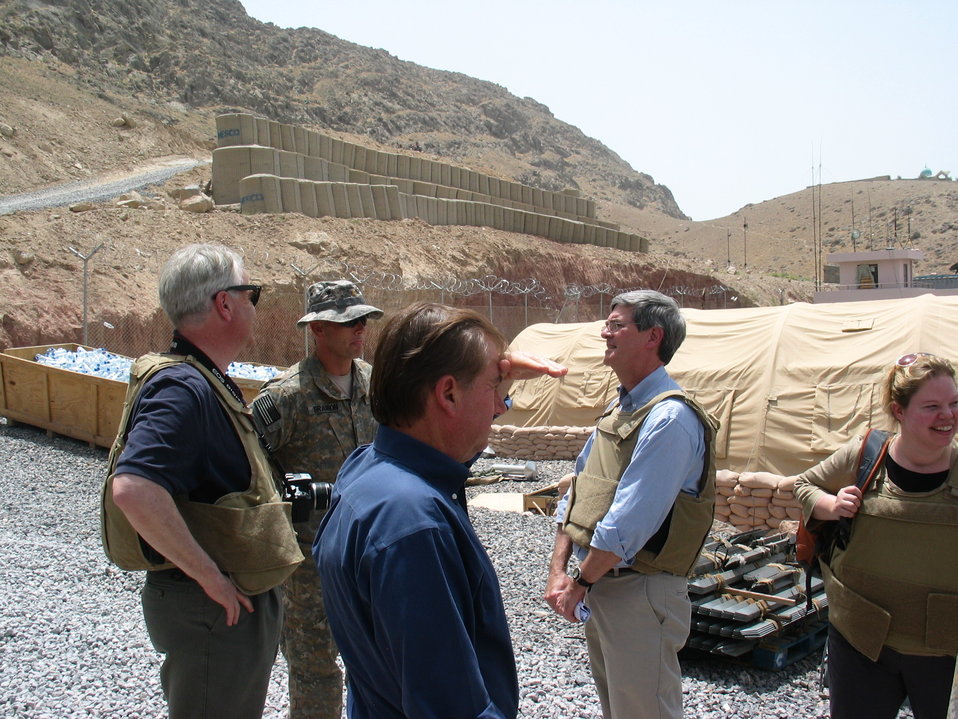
CODEL Berman